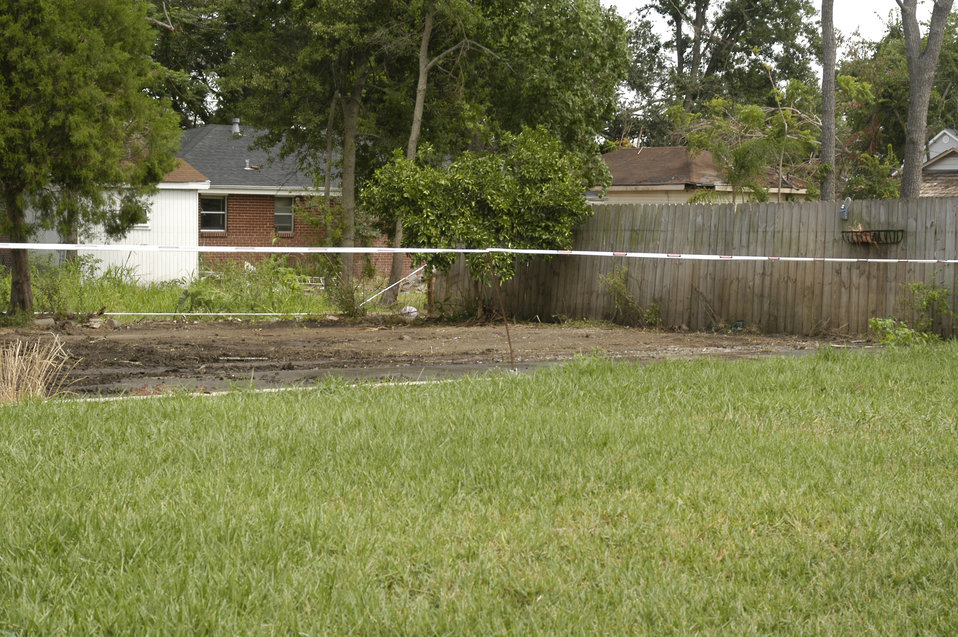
Many of the older homes and buildings in the New Orleans, LA, locale that were destroyed by Hurricane Katrina contained asbestos material (i.e. asbestos roofing tiles, transite siding, insulation, floor tiles, and popcorn ceilings). The U.S. Army Corps of Engineers (USACE) was mandated to follow strict environmental protocols in the demolition of these homes that were designated Regulated Asbestos Containing Material (RACM) demos. Upon completion of the RACM demolition the homeowner was left with a cleared piece of land ready for rebuilding.